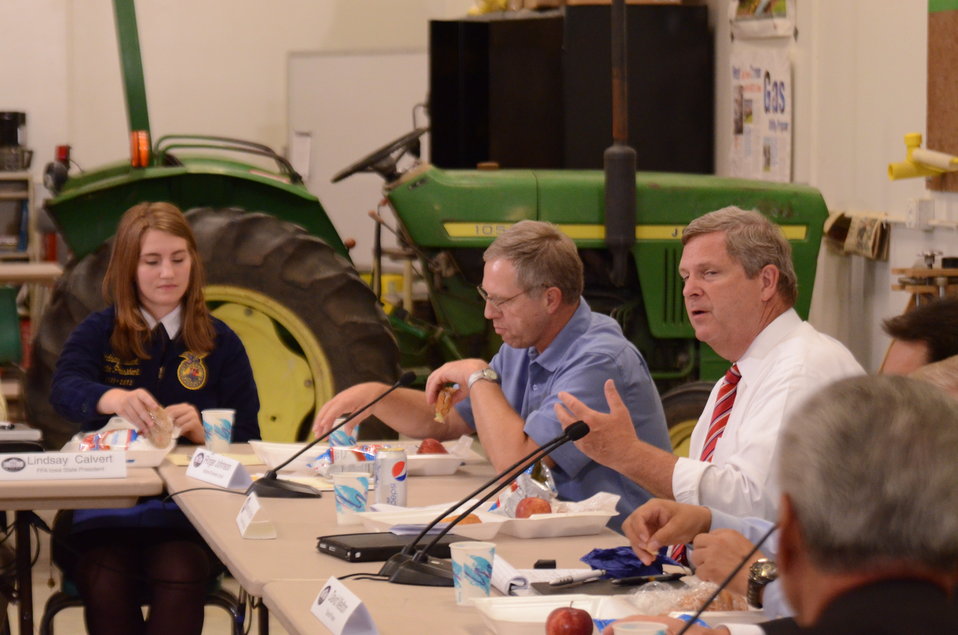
Agriculture Secretary and chair of the White House Rural Council, Tom Vilsack, meets with Iowa stakeholders at the Northeast Iowa Community College, IA, after the White House Rural Economic Forum, on Tuesday, Aug. 16, 2011.